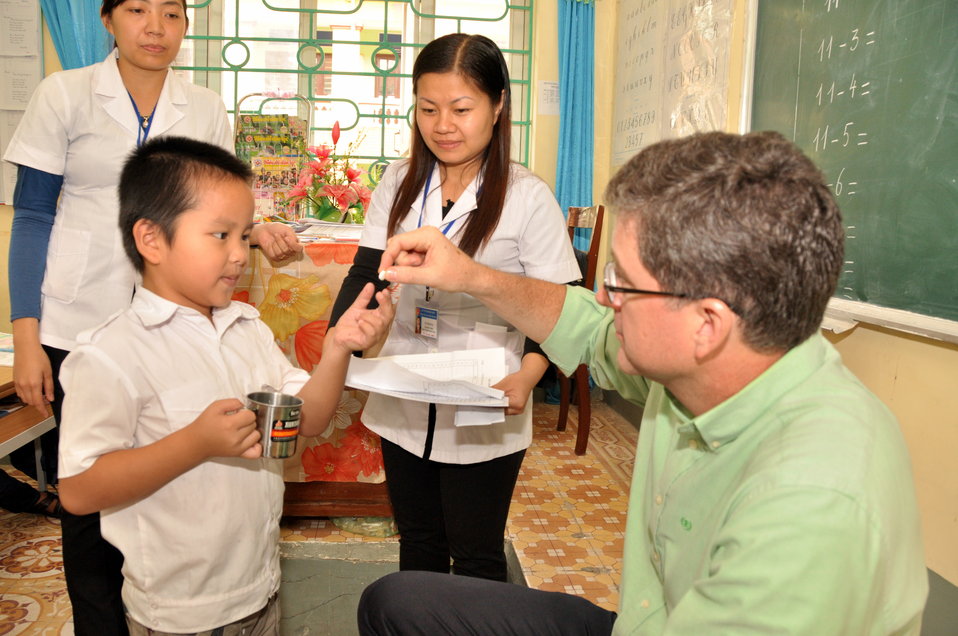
School children receive a dose of deworming medicine in Dien Bien

October 31, 2012